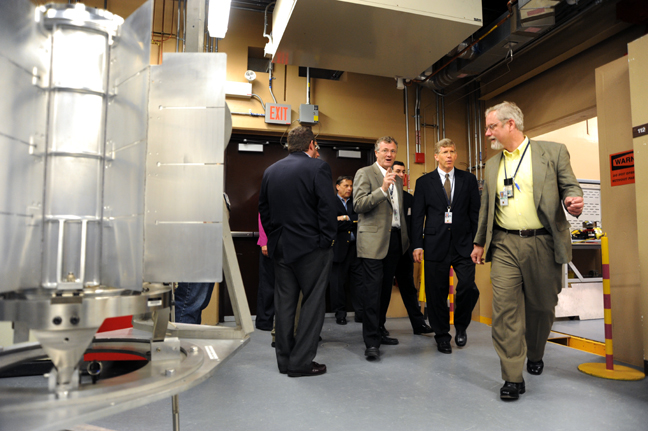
P-6250-25 72dpi

Undersecretary Poneman visits the Space and Security Power Systems Facility. Here heat and power sources are assembled for use in space and national security missions.